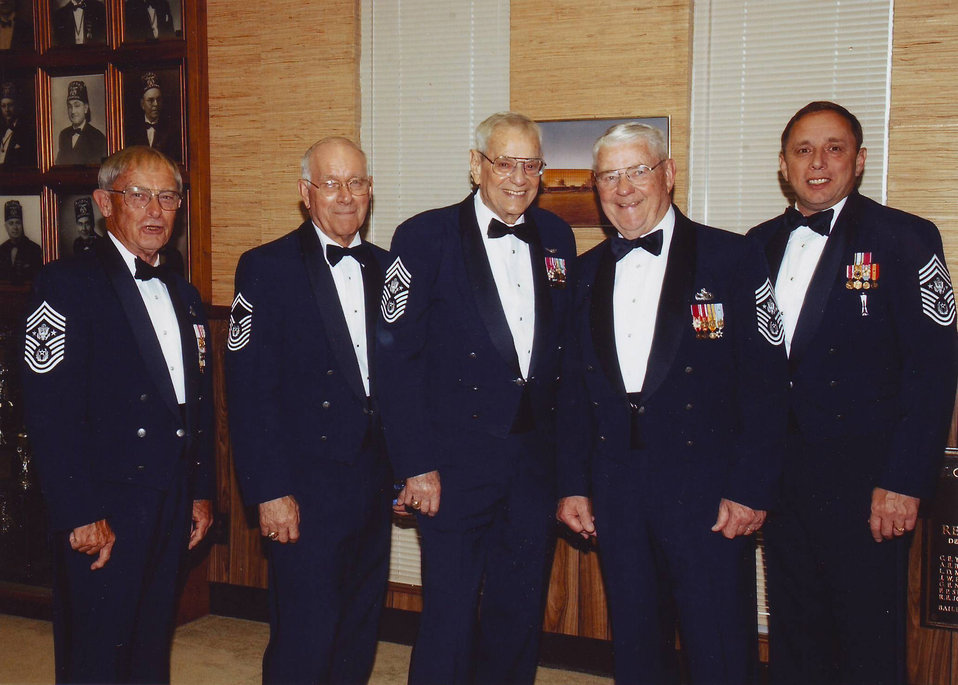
Chief Pfingston loses fight with cancer

Retired Chief Master Sgt. Gary Pfingston (left), the 10th chief master sergeant of the Air Force, is shown at a recent Senior NCO Academy graduation at Maxwell Air Force Base, Ala. Chief Pfingston died of cancer June 23 in San Antonio.